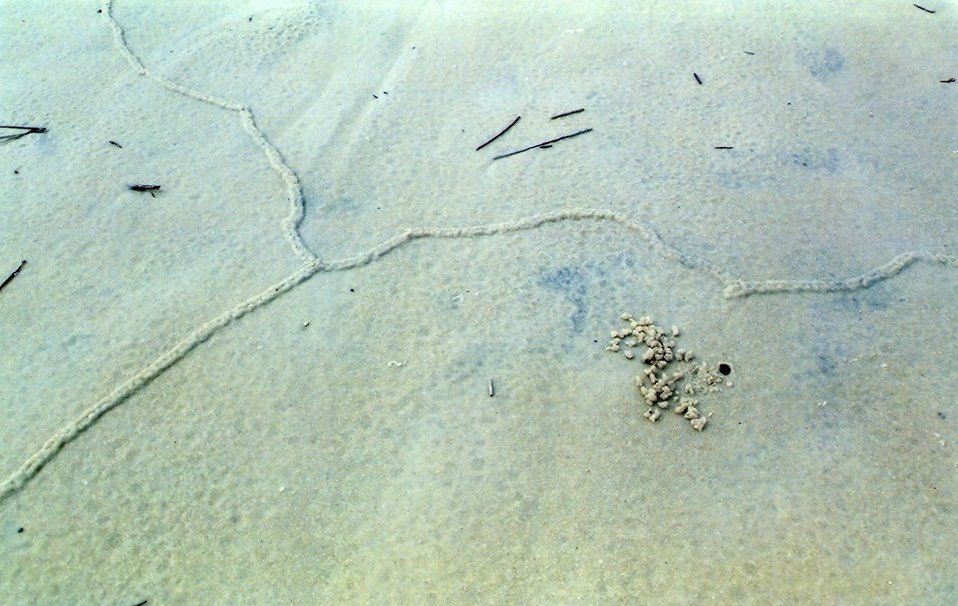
Pencil-sized tunnels caused by some type of burrowing animal caused a series of hieroglyphic appearing designs on the beach. Burrowing animal left evidence of its excavations on the beach sand.